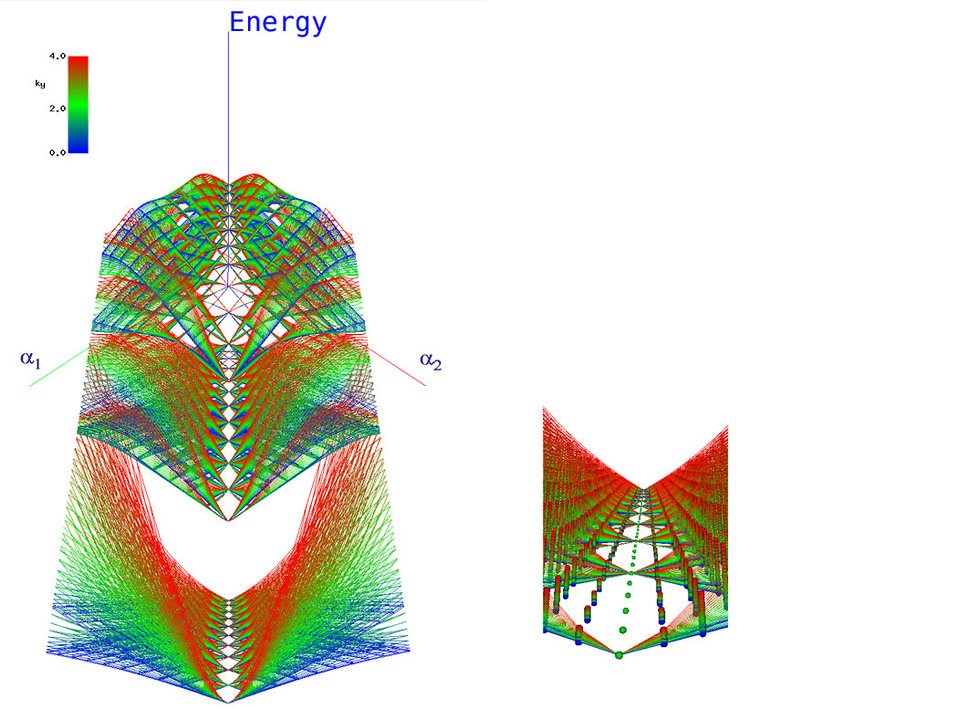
The Energy Spectrum of Ultracold Atoms in a Synthetic Magnetic Field

One of the driving forces behind studying ultracold atoms is the exquisite control and flexibility available in experiments. This flexibility enables us to engineer new states of matter, e.g. cold atom emulators of other physical systems which are not presently accessible to experiment. The figure on the left shows the spectrum of energy levels of a cold atom in a laser configuration designed to make the atom mimic an electron confined in two dimensions, in a generalization of a magnetic field called a 'non-Abelian gauge field.' The atom's energy levels are functions of three parameters: a1 and a2 are related to the strengths of the artificial magnetic field, and ky represents the atom's momentum. Along the line (a1 = a2), the field reduces to the usual (Abelian) magnetic field.